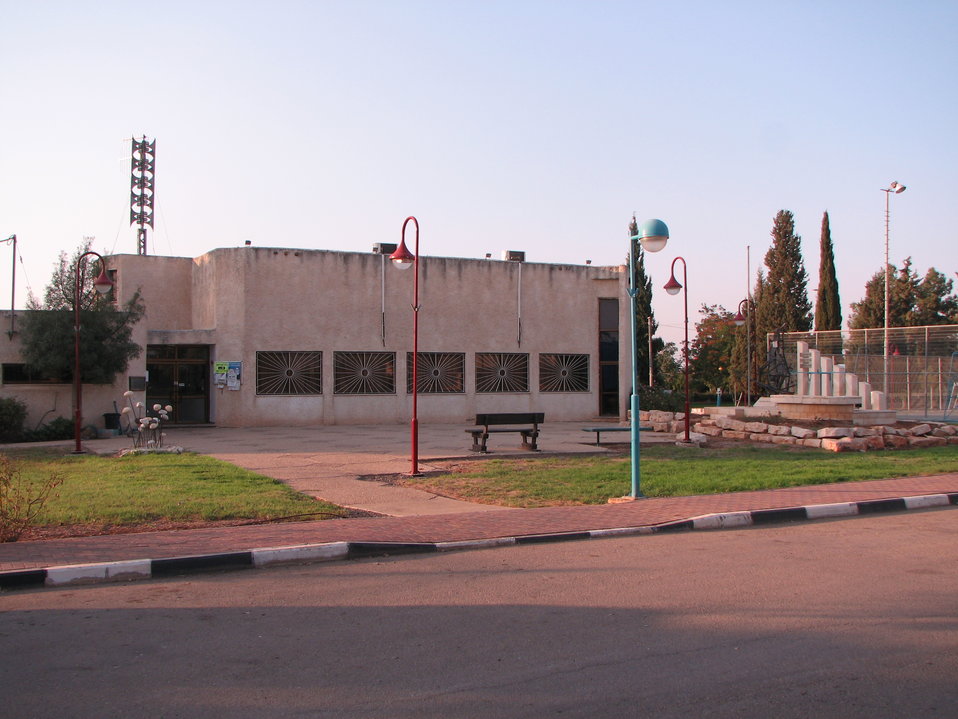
עברית: בית העם במושב ברק